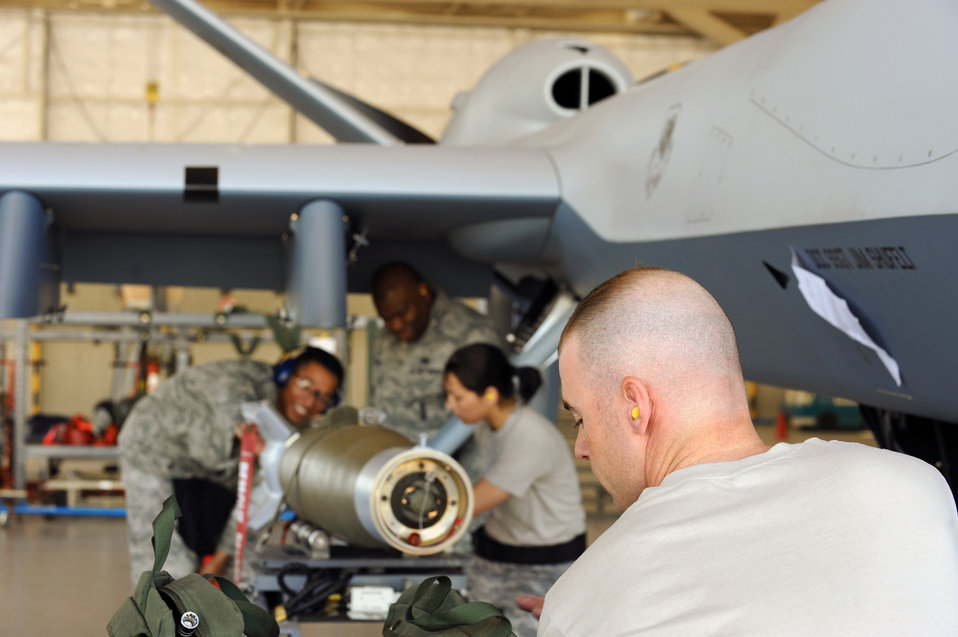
Training for unmanned aircraft systems

Senior Airman Jason Atwell operates a bomb lift while Staff Sgt. Stephanie Hughes and Senior Airman Gale Passe prepare to load a AGM-114 Hellfire II air-to-ground missile onto the MQ-9 Reaper during weapons load training April 22 at Creech Air Force Base, Nev. Reaper load crewmembers were conducting monthly training to maintain their qualifications on the airframe.